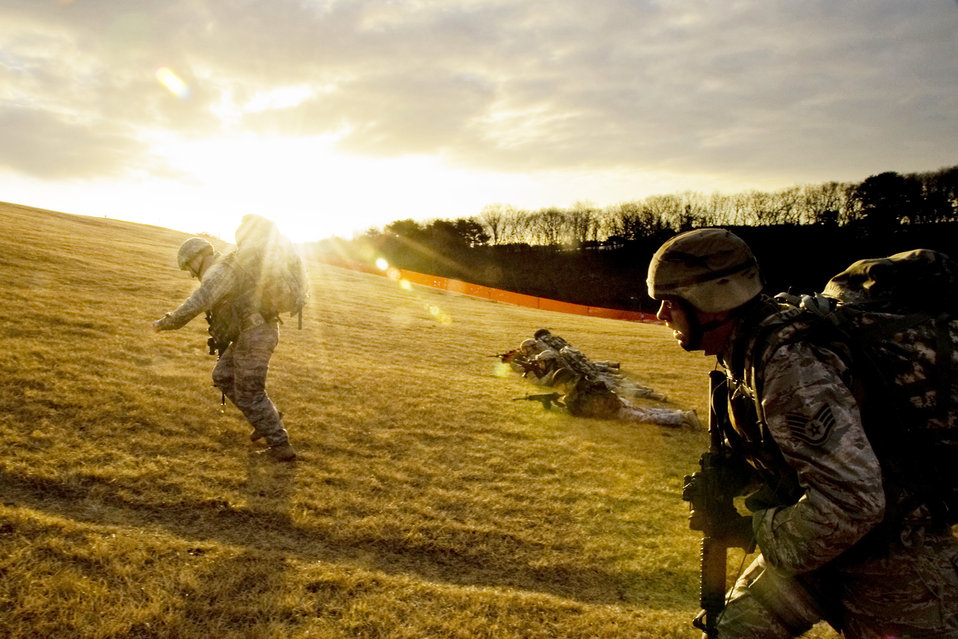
Let's go!

Airmen of the 35th Civil Engineer Squadron Explosive Ordnance Disposal flight perform a bounding drill Jan. 8, 2010, at Misawa Air Base, Japan, while going uphill. The drill demonstrated a firing tactic where one group makes their way uphill, while another group engages enemy positions. The groups alternate until both reach their final position.